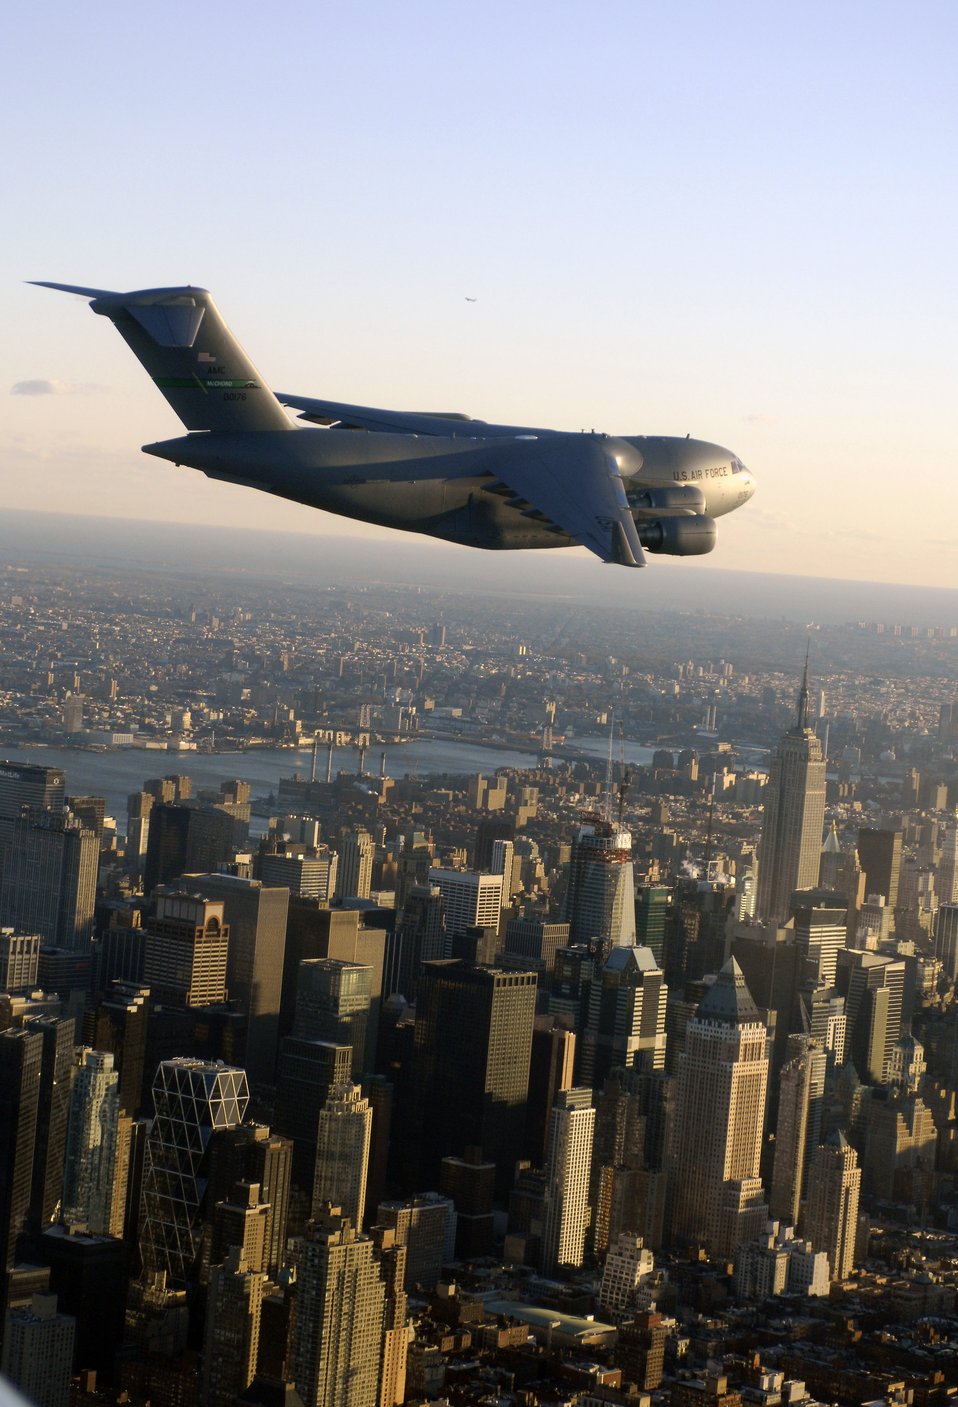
C-17 uses synthetic fuel blend on transcontinental flight

A C-17 Globemaster III flies over New York City after completing the first transcontinental flight on synthetic fuel Dec. 17. The C-17 took off before dawn from McChord Air Force Base, Wash., and landed in the early afternoon at McGuire AFB, N.J.